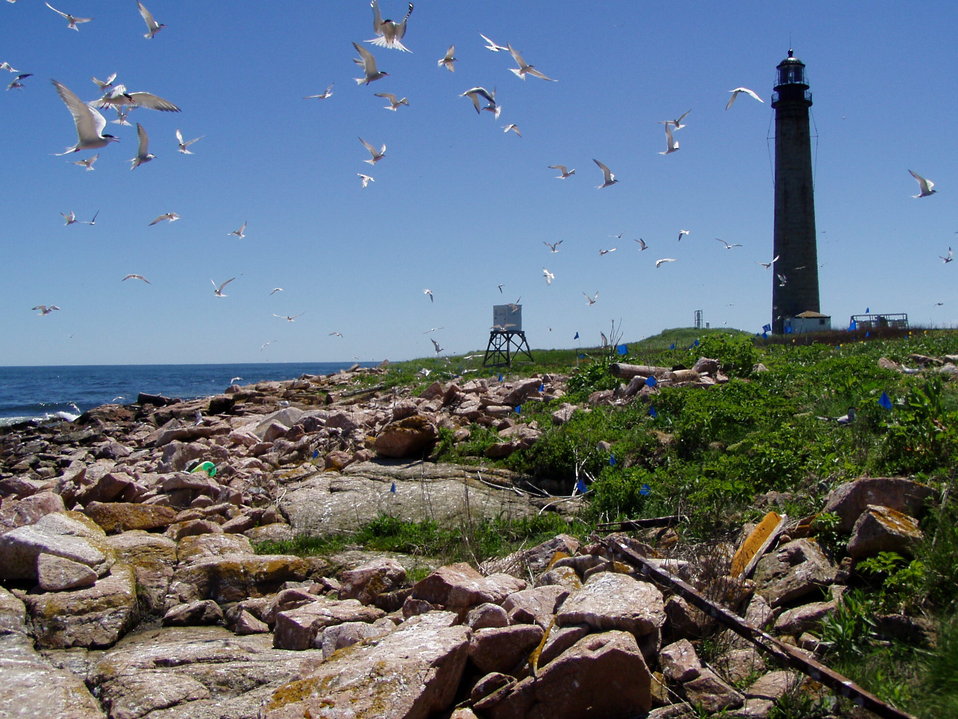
Terns up at Petit Manan Island

Terns at Petit Manan Island at Maine Coastal Island National Wildlife Refuge